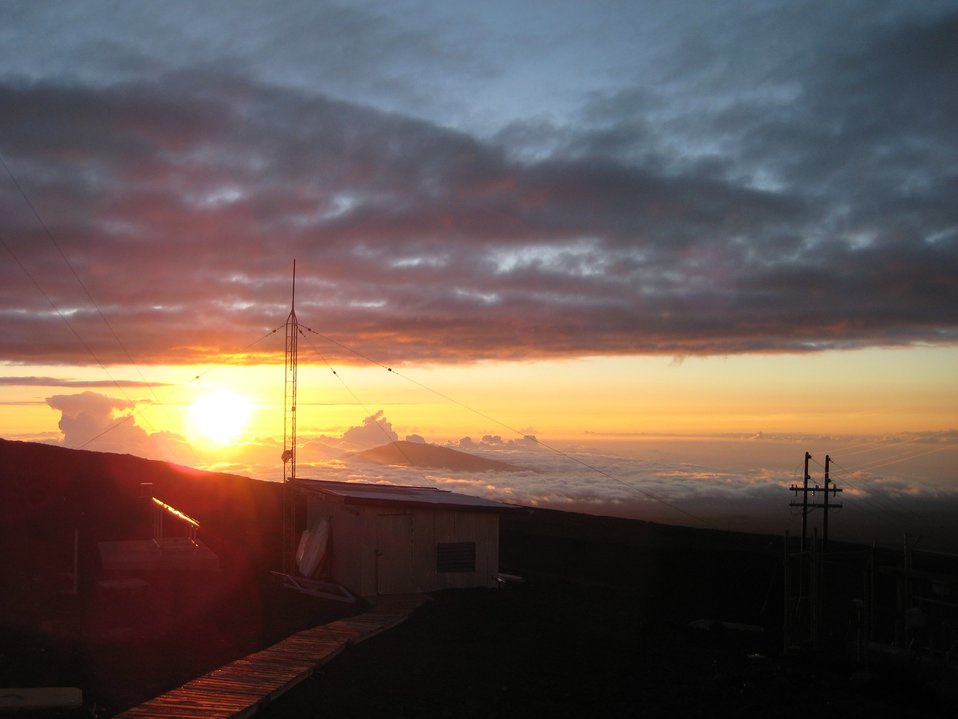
Looking NW from the Mauna Loa atmospheric observatory at sunset.